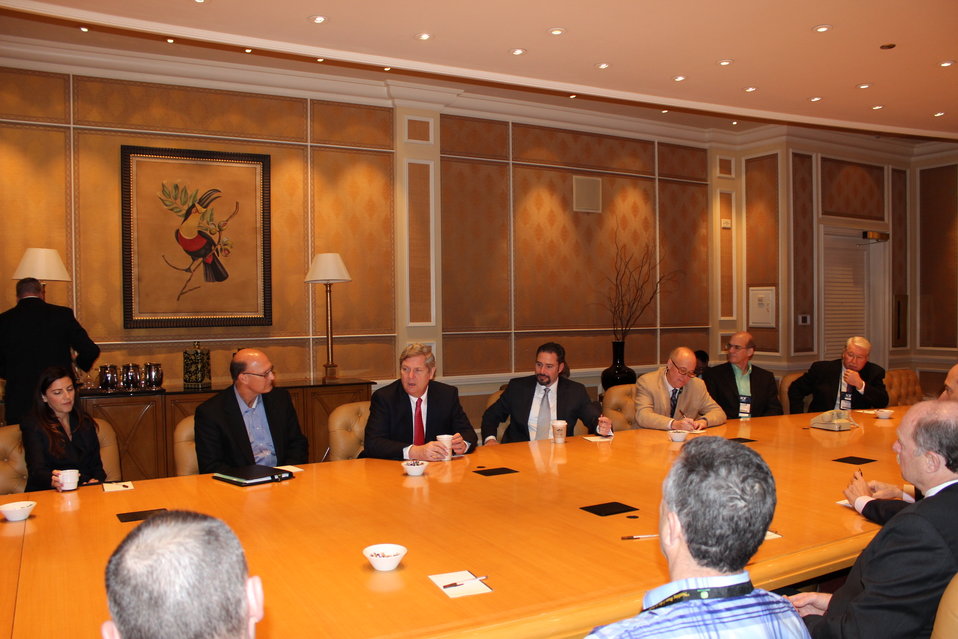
Agriculture Secretary Tom Vilsack meets with the National Biodiesel Board at the National Biodiesel Conference in Las Vegas, NV on Feb. 7, 2013. Secretary Vilsack discussed the unlimited opportunity for America to produce more homegrown energy through the development and innovation of advanced biofuels and the significant contributions biofuels and other biobased products have made to America’s economic and energy security, as well as the importance of supporting the industry through research, investment and increased collaboration.